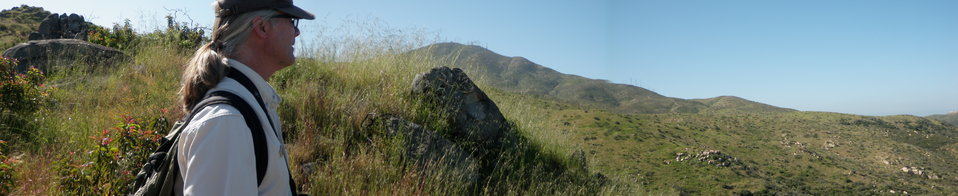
Refuge Wildlife Biologist scans the hillsides for Quino checkerspot butterflies

Mount Miguel is in the distance.